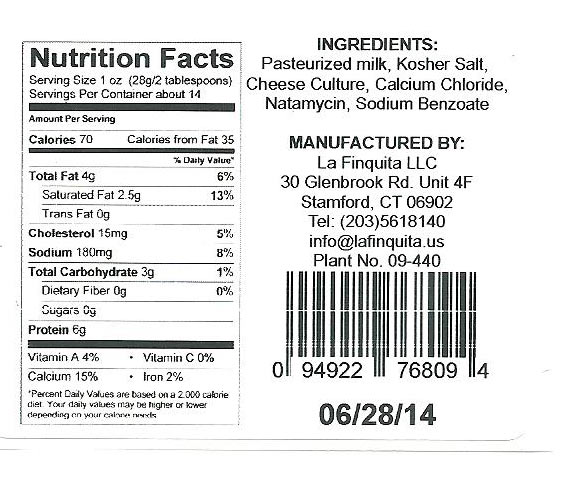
RECALLED – Cheese

June 12, 2014 – a Finquita Cheese Issues An Allergy Alert Due To Potential Peanut And Tree Nut Contamination In Fresh Farmers Cheese.